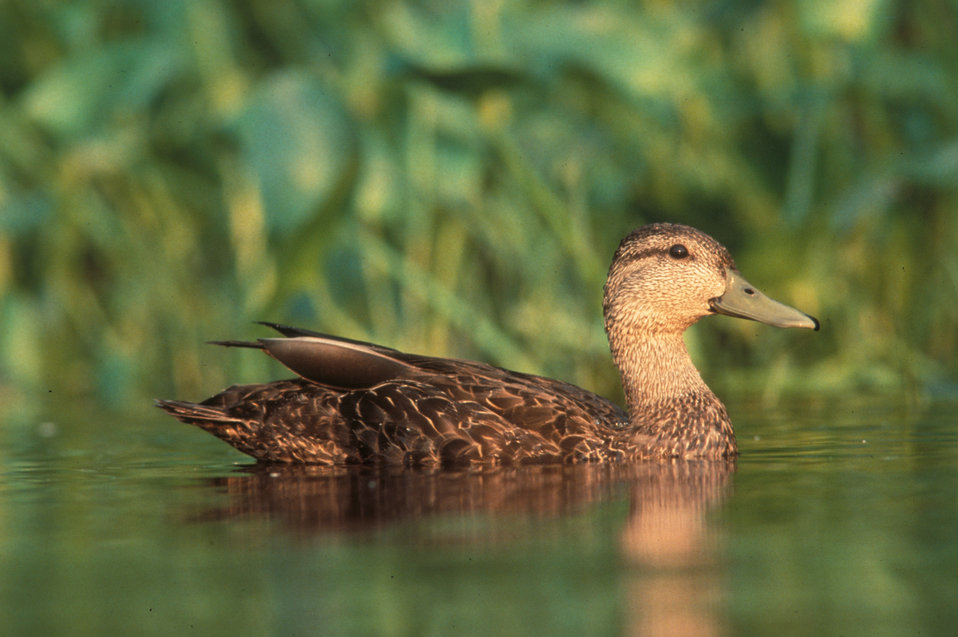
Black Duck

The black duck is just one of the species at Blackwater National Wildlife Refuge that could be affected by climate change and sea level rise.